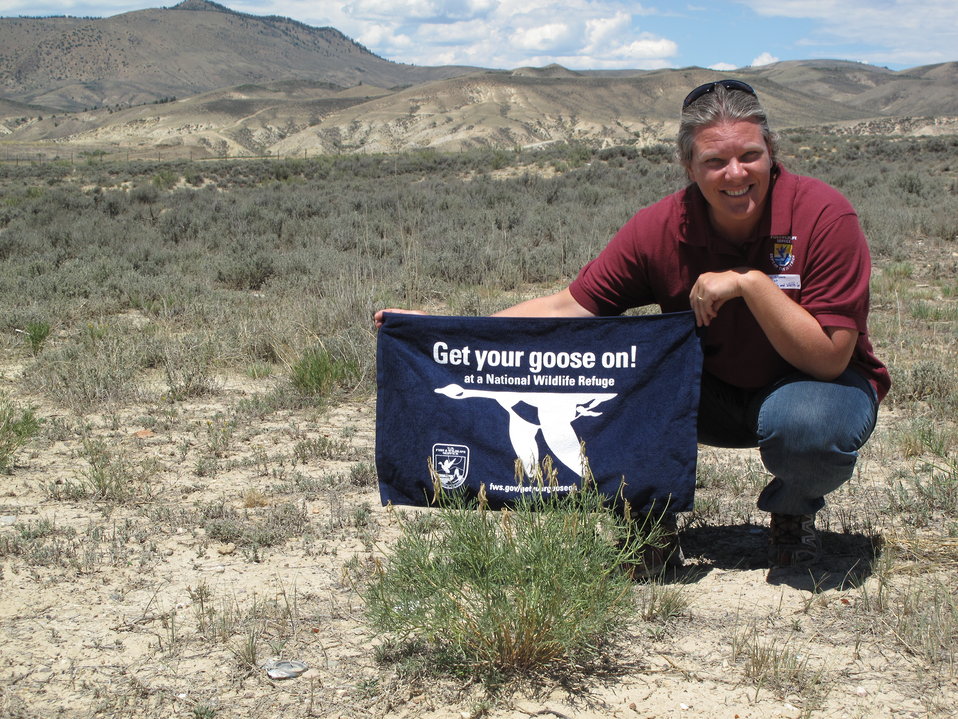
Service botanist with Osterhout Milkvetch

Gina Glenne, a Mountain-Prairie Region botanist holds up a “Get your Goose on!” towel in in front of the endangered Osterhout milkvetch plant (bit.ly/PWBd86 ), just east of Kremmling, Colo.